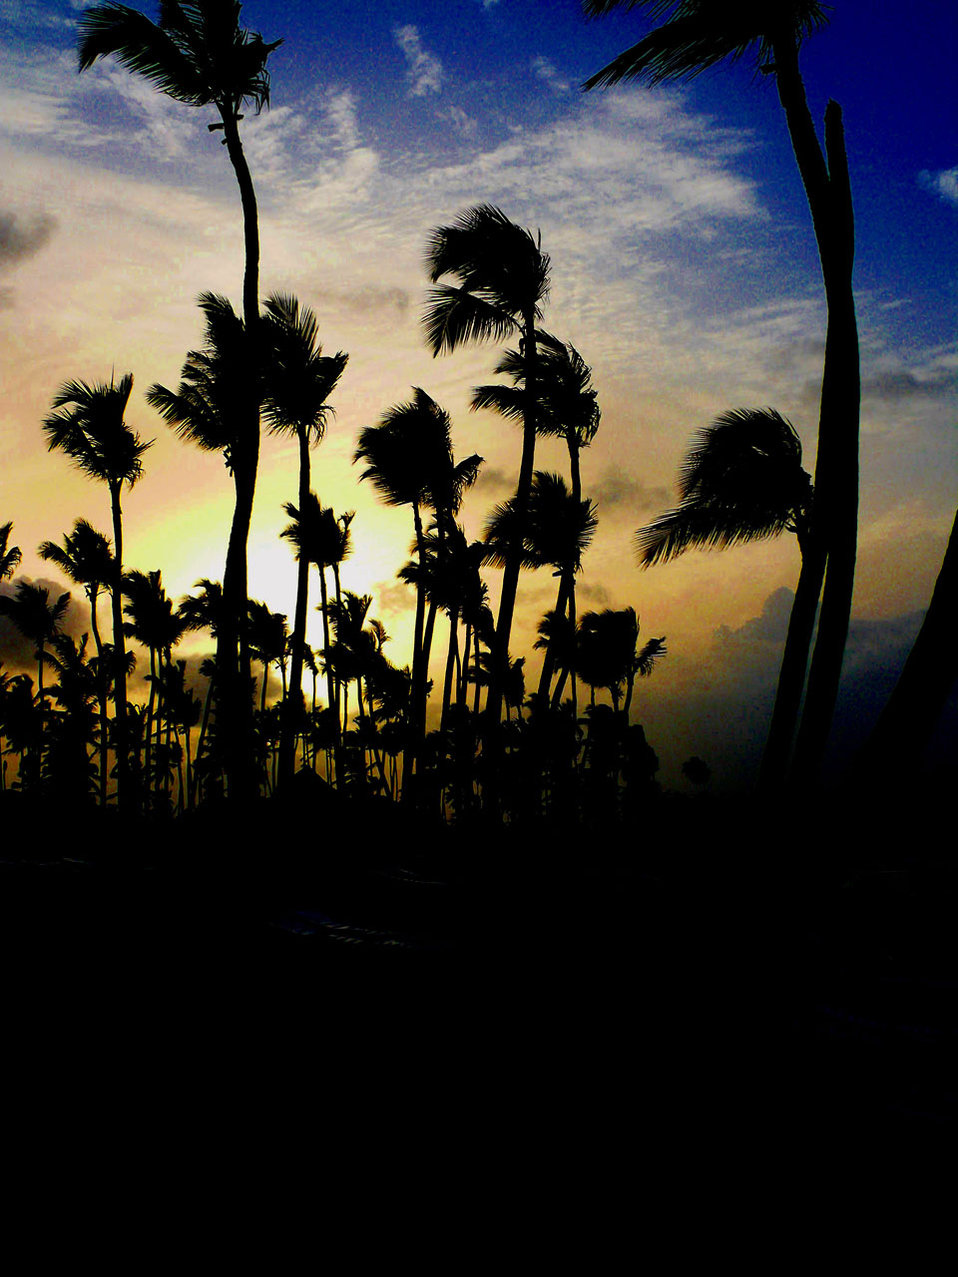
Beach at sunset

Beach uvero alto.